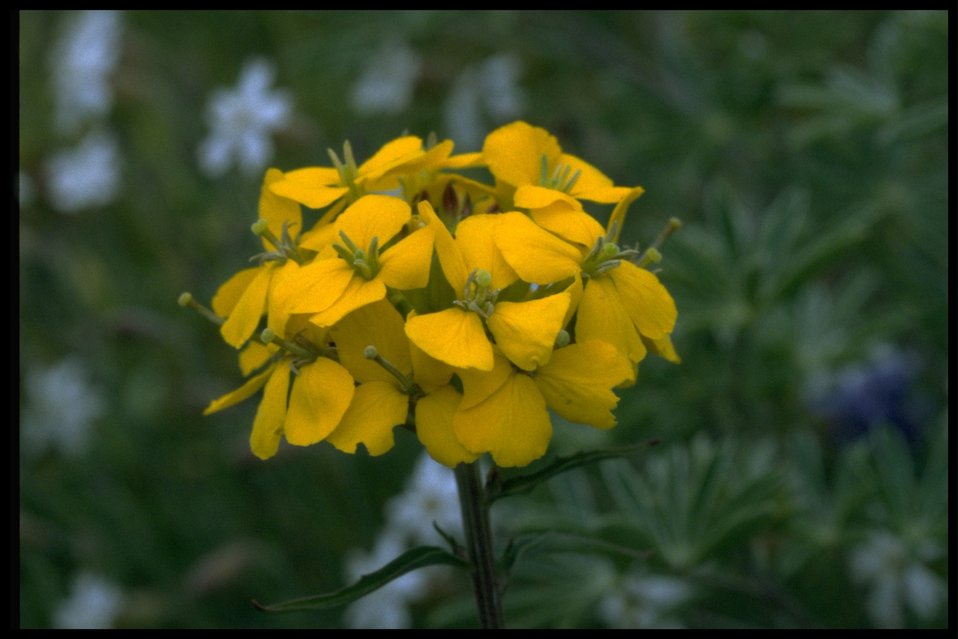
Medium shot of Erysimum cheiranthoides.